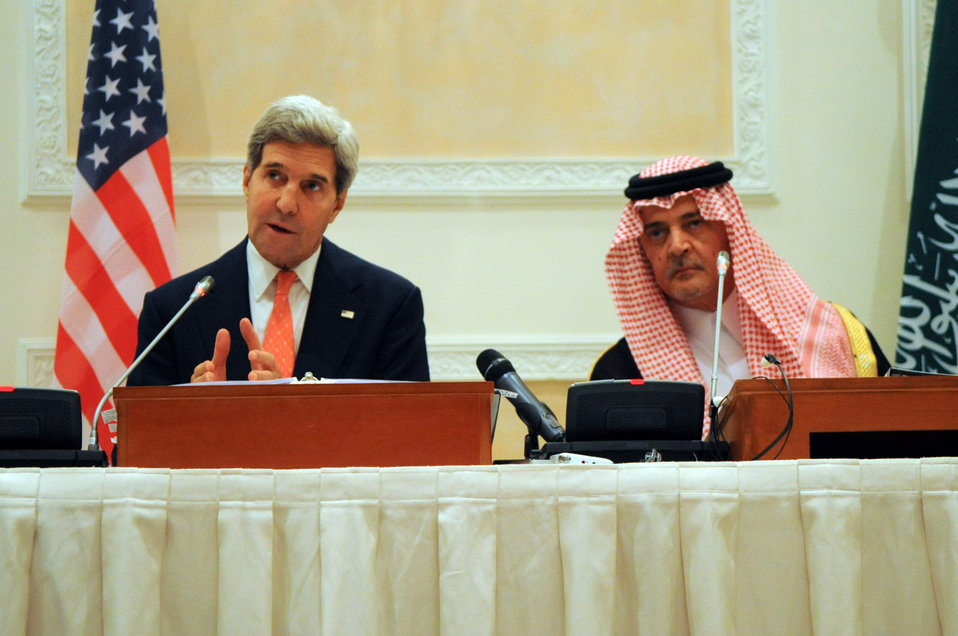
Secretary Kerry Speaks During a News Conference With Saudi Foreign Minister al-Faisal

U.S. Secretary of State John Kerry speaks during a news conference with Saudi Foreign Minister Saud al-Faisal in Riyadh, Saudi, Arabia on November 4, 2013.